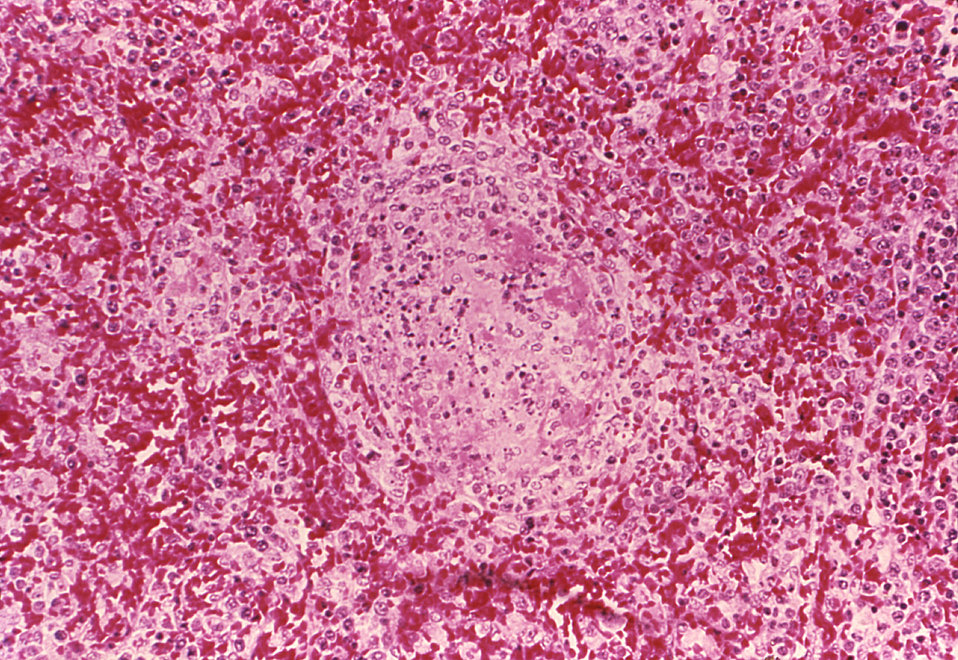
At a relatively-low magnification of 160X, this hematoxylin and eosin-stained splenic tissue sample revealed the histopathologic changes indicative of vasculitis and thrombosis associated with what was diagnosed as a case of fatal human plague.